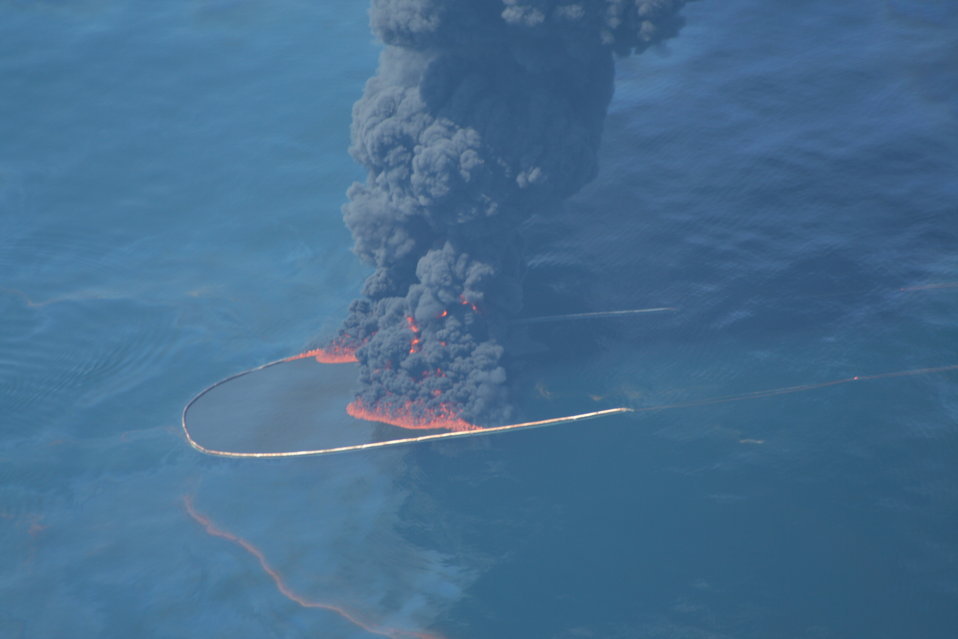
May 6 Open Water Oil Burn

May 6, 2010 - Open-water oil burn

Photo taken from U.S. EPA's Airborne Spectralphotometric Environmental Collection Technology (ASPECT) aircraft.